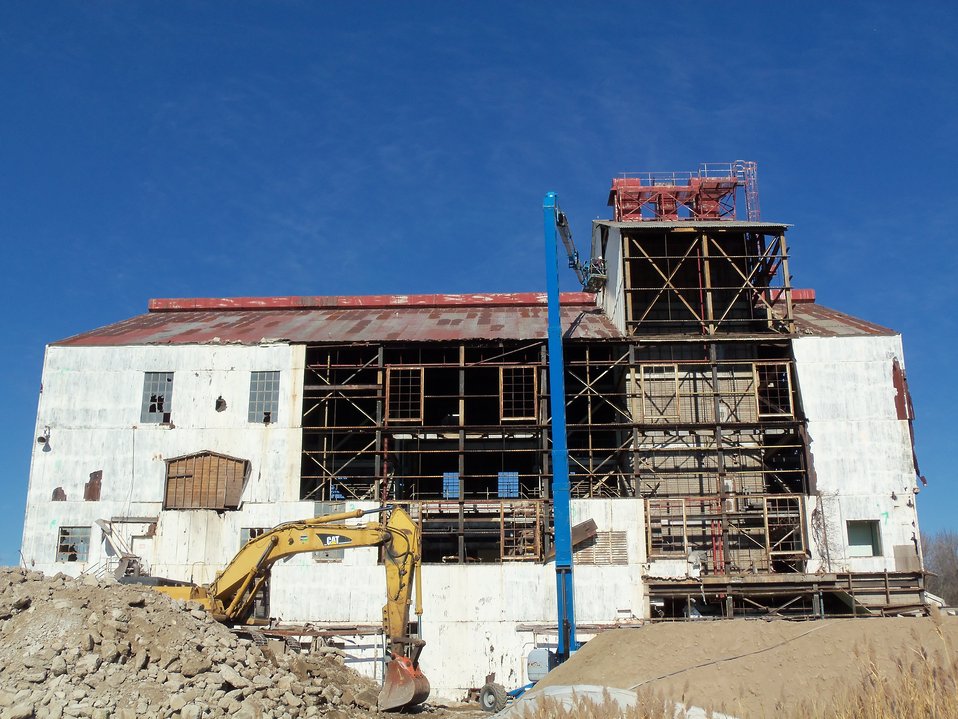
BLDG 401 SIDE OF BUILDING REMOVAL

Activities from the Niagara Falls Storage Site, which is associated with the former Lake Ontario Ordnance Works. Formerly Utilized Sites Remedial Action Program (FUSRAP), a program initiated in 1974 to identify, investigate and clean up or control sites that were part of the Nation's early atomic energy and weapons program. Activities at the sites that are eligible for FUSRAP were conducted by Manhattan Engineer District (MED) or the Atomic Energy Commission (AEC), both predecessors of the Department of Energy (DOE). The U.S. Army Corps of Engineers was assigned management of FUSRAP by Congress in 1997.